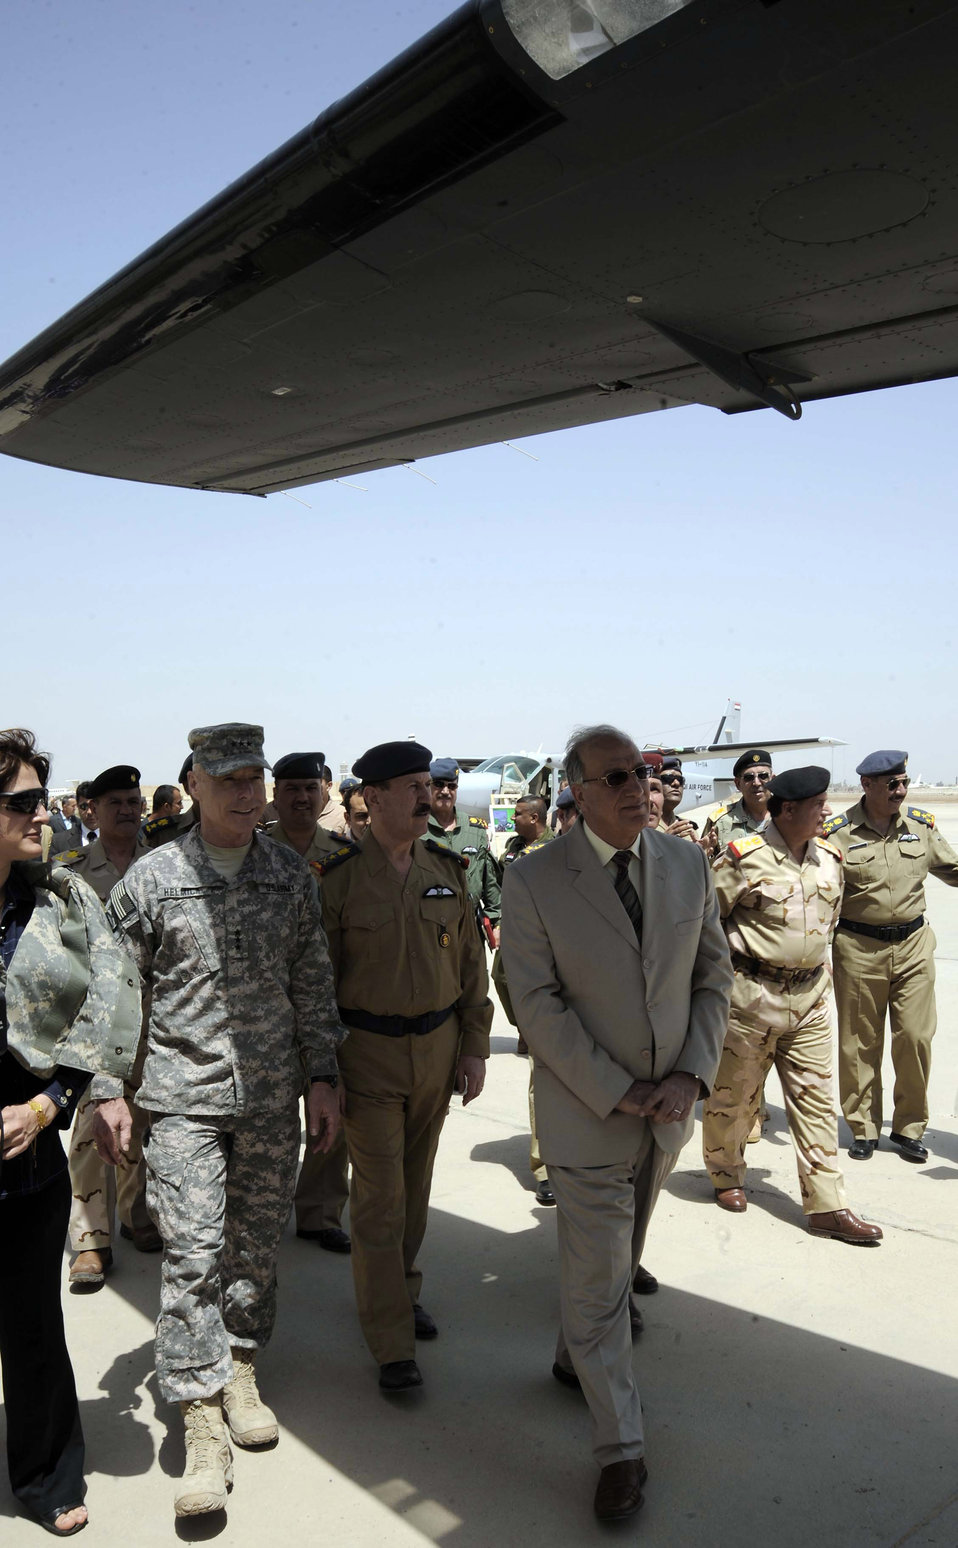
Iraqis celebrate 78th annual Air Day

Lt. Gen. Frank Helmick, Mulit-National Security Transition Command-Iraq commanding general (left); Abd al-Qadir al-Mufriji, Iraqi Minister of Defense and others tour the Iraqi aircraft static display area April 22 during the 78th annual Iraqi Air Day at New al-Muthana Air Base, Iraq. U.S. Air Force Airman and Iraqi military members attended the event to celebrate how far the Iraqi air force has come in the past few years.